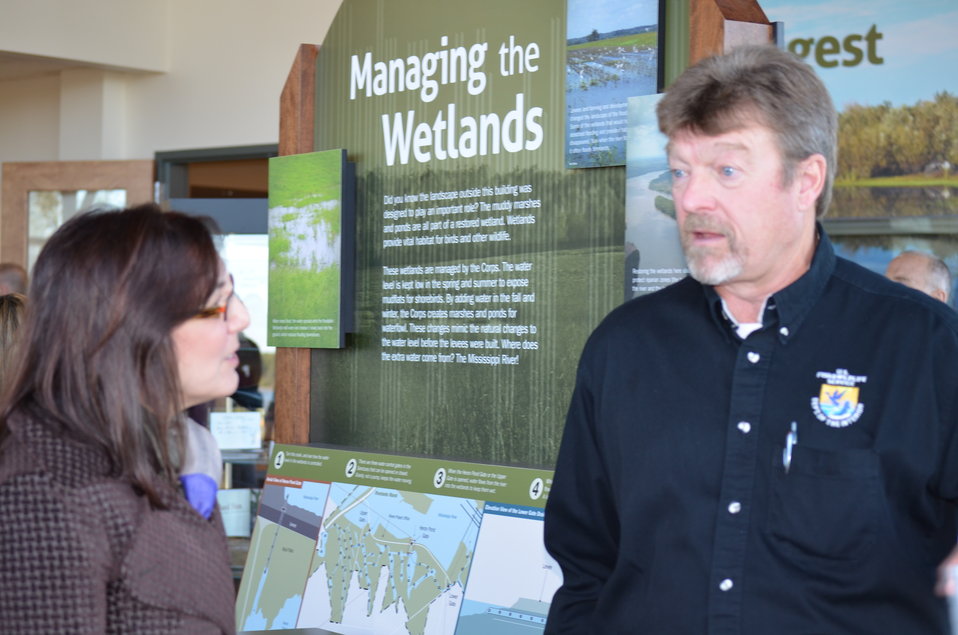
Talking refuges

Acting Asst. Secretary Rachel Jacobson with Big Muddy National Fish and Wildlife Refuge manager Tom Bell. USFWS/Ashley Spratt